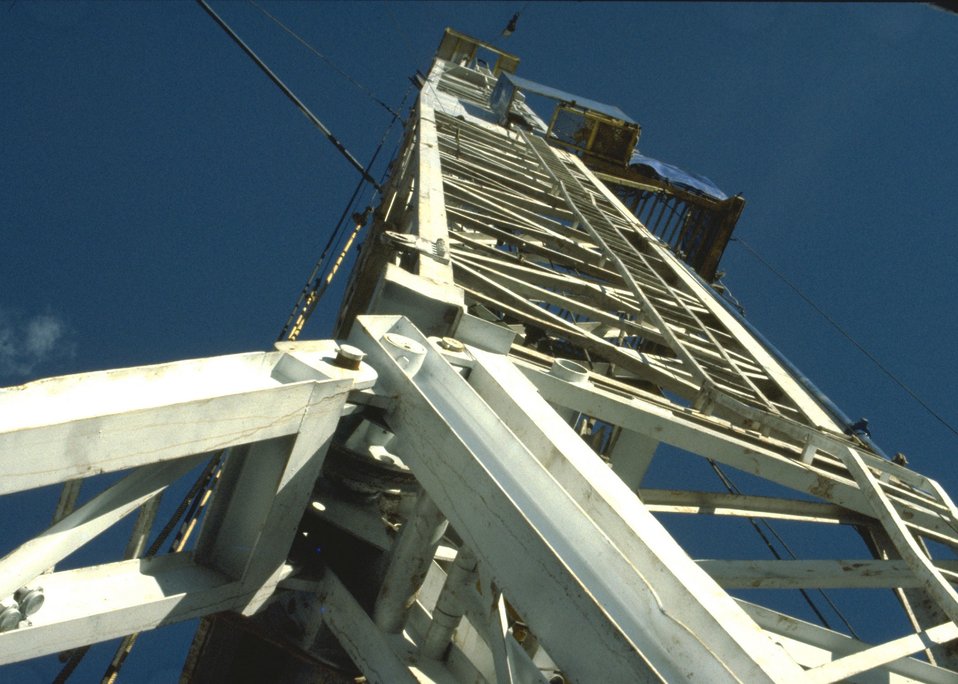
Deep well rig.